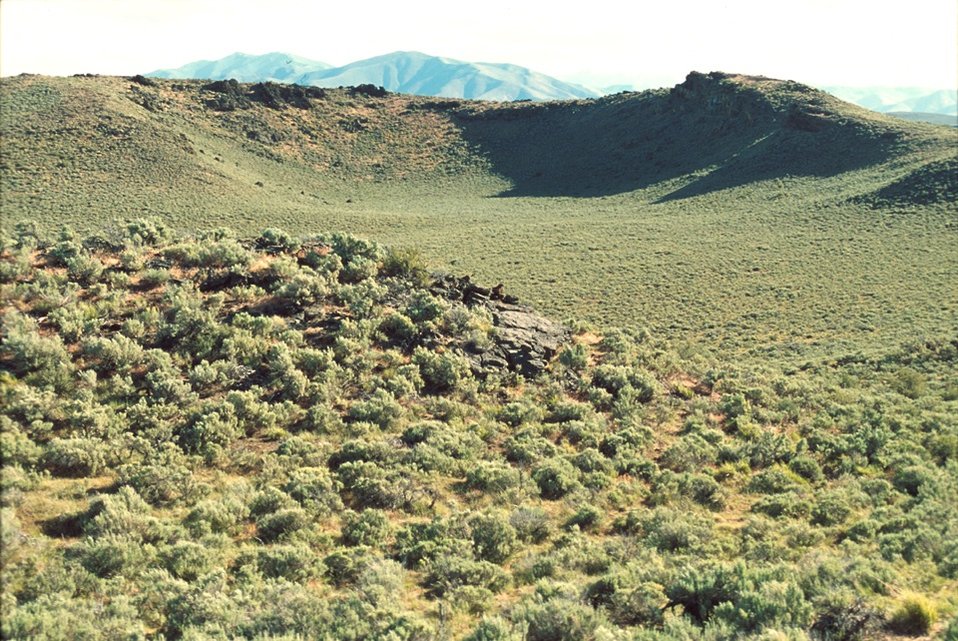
National Monument Shoshone Field Office USRD Upper Snake River District